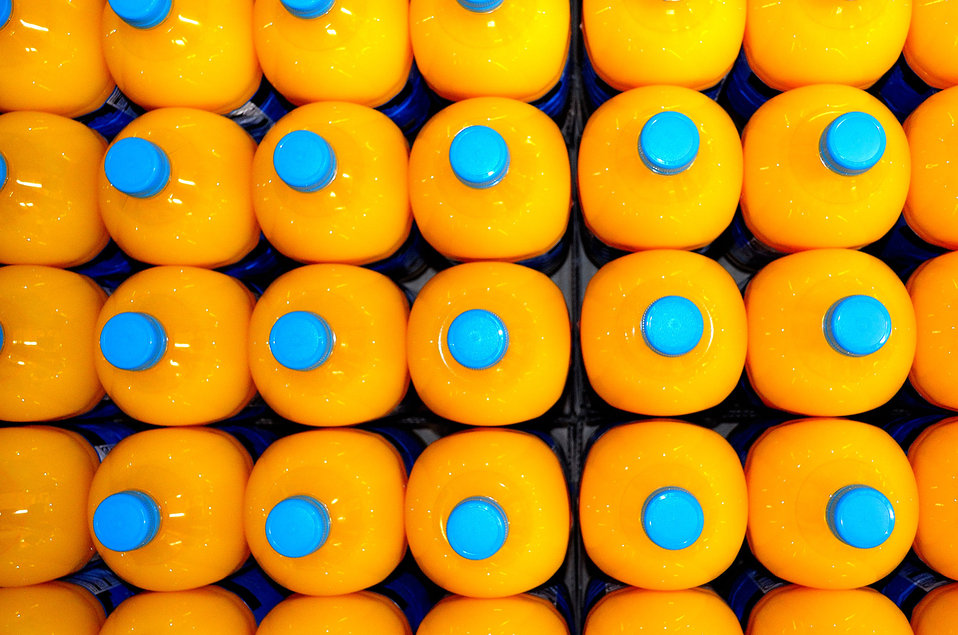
Bottles background.